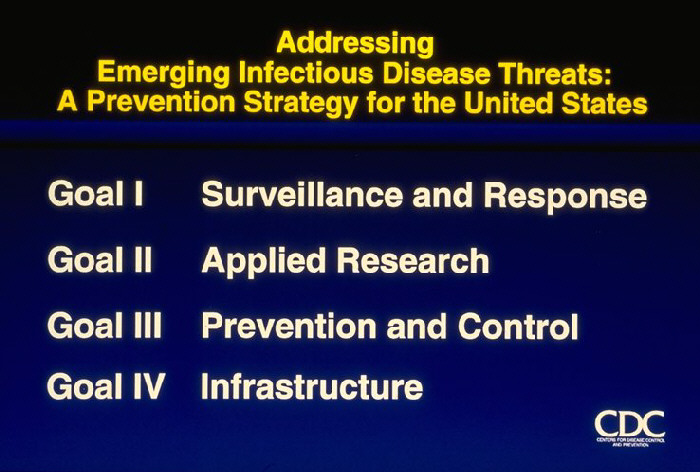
Goals of Addressing Emerging Infectious Disease Threats: A Prevention Strategy for the United States (listing)